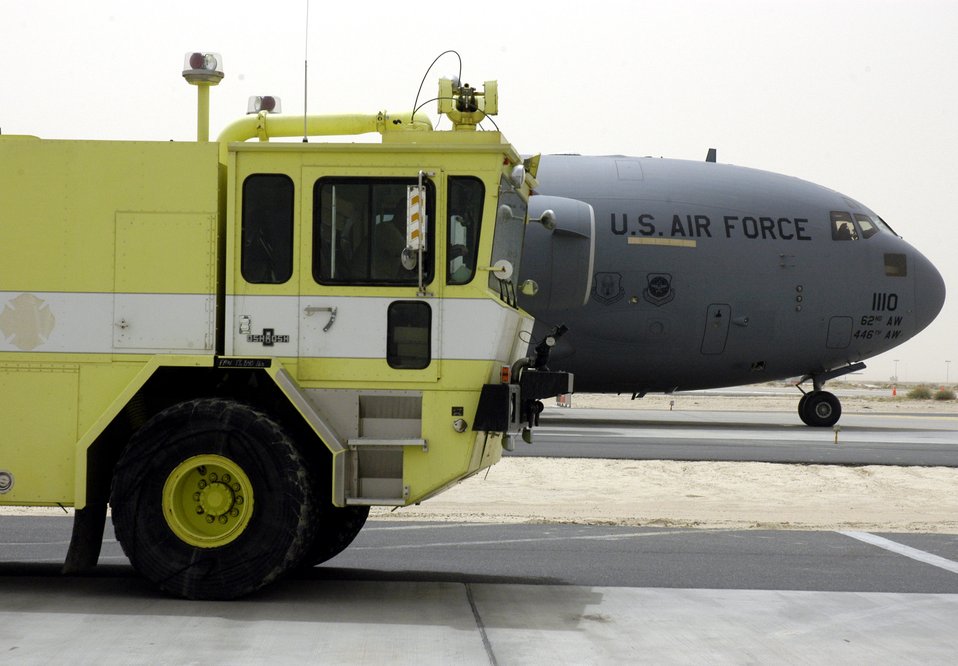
Air Force, Navy deliver firetrucks donated by Baltimore

One of two fire and rescue trucks donated by Baltimore officials and bound for Mazar-i-Sharif Airport in Northern Afghanistan sits on a runway at a forward operating location in Southwest Asia April 19 awaiting to be loaded into a C-17 Globemaster III.